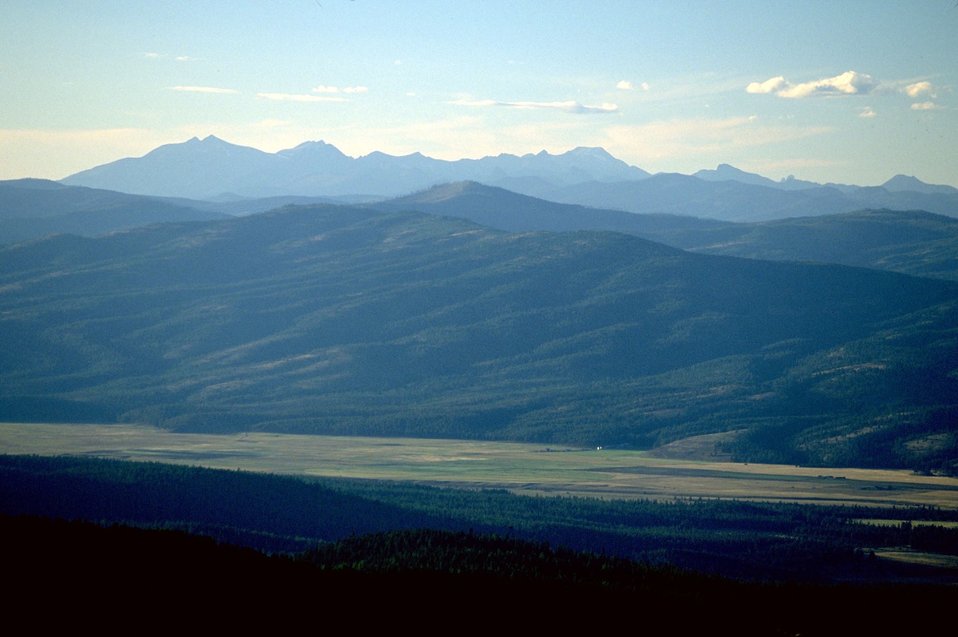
Scenic view from Garnet Back Country Byway--Blackfoot Valley